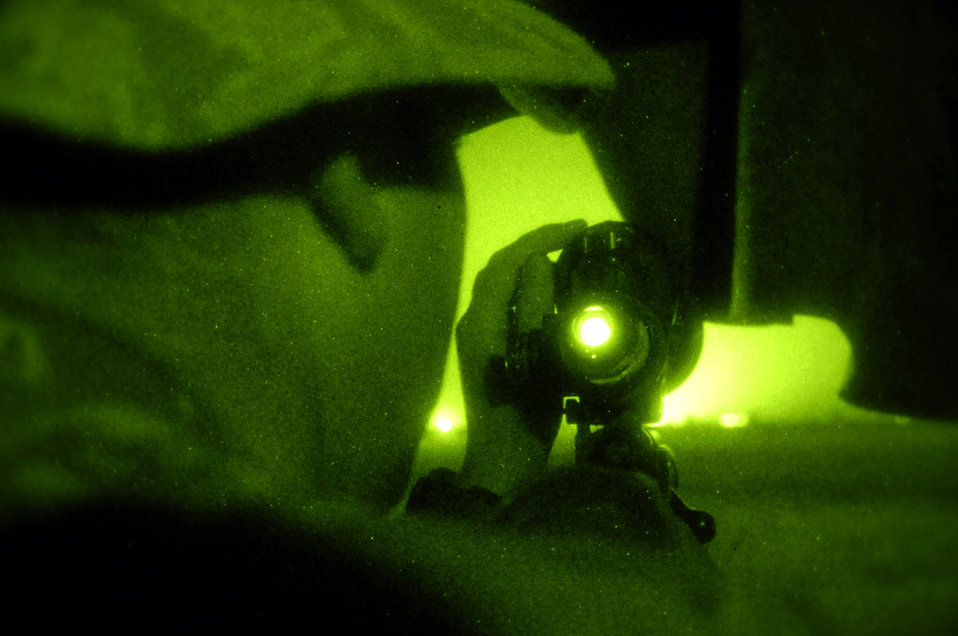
Sniper training

Staff Sgt. Curtis Huffman sets his sites while on top of a lookout point where his sniper team has set up surveillance for terrorist activity Nov. 14 in Iraq. The 506th Expeditionary Security Forces Squadron at Kirkuk Air Base, Iraq, houses a close precision engagement team of Air Force snipers who train as anti-sniper teams to target terrorist and insurgent snipers attacking U.S. and coalition forces in the area. Sergeant Huffman is from the 354th Security Forces Squadron at Eielson Air Force Base, Alaska, deployed to Kirkuk Air Base, Iraq, as a member of the 506th Expeditionary Security Forces Squadron.